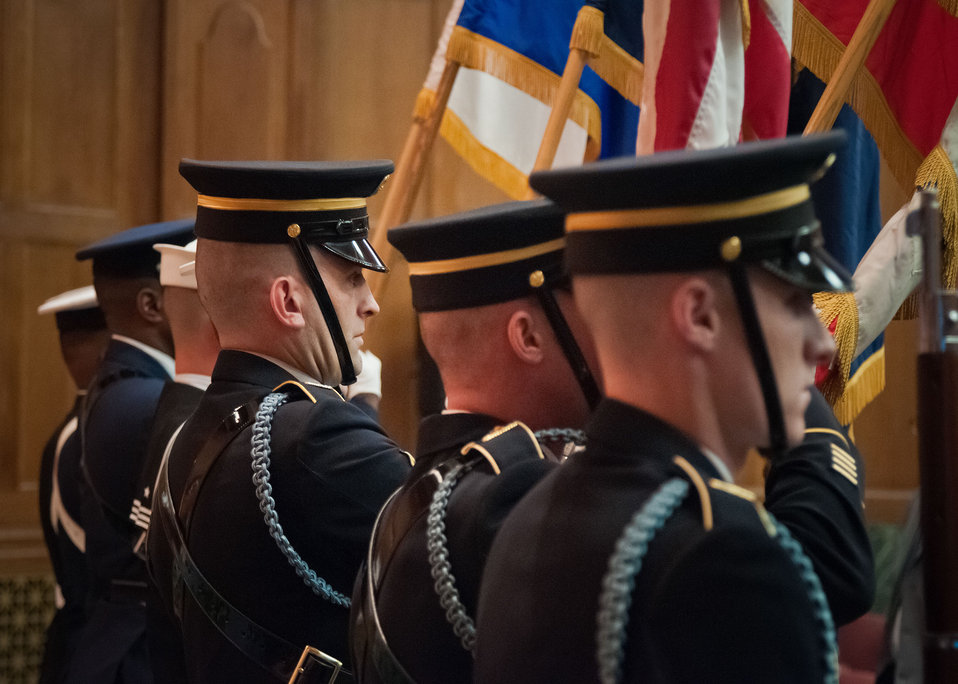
The U.S. Military District of Washington Joint Armed Forces Color Guard presented the colors at the U.S. Department of Agriculture's (USDA) 2012 National Disability Employment Awareness Month celebration celebration in the Jefferson Auditorium at USDA in Washington, D.C. on Wednesday, Oct. 17, 2012. The theme for the event was, “A Strong Workforce is an Inclusive Workforce: What Can You Do?